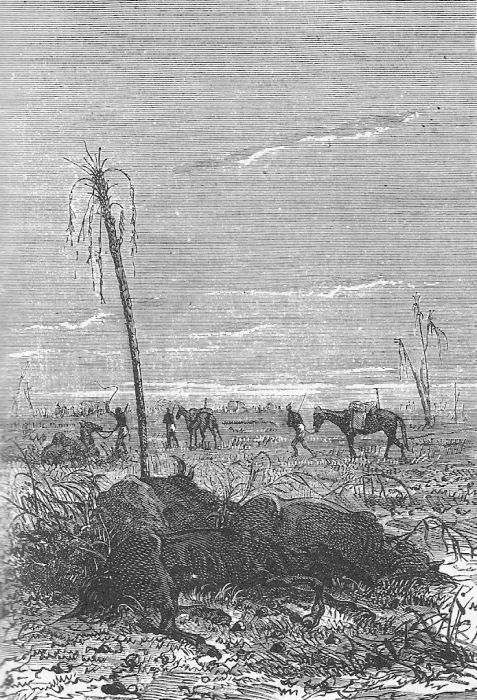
An illustration from Jules Verne's novel 'The Adventures of Three Englishmen and Three Russians in South Africa' (1870) drawn by Jules Férat. Polski: Ilustracja powieści Juliusza Verne'a 'Przygody trzech Rosjan i trzech Anglików w południowej Afryce' (1870) autorstwa Julesa Férata. Français : Jules Verne: 'Aventures de trois russes et de trois anglais dans l’Afrique australe' (1870), dessins par Jules Férat.